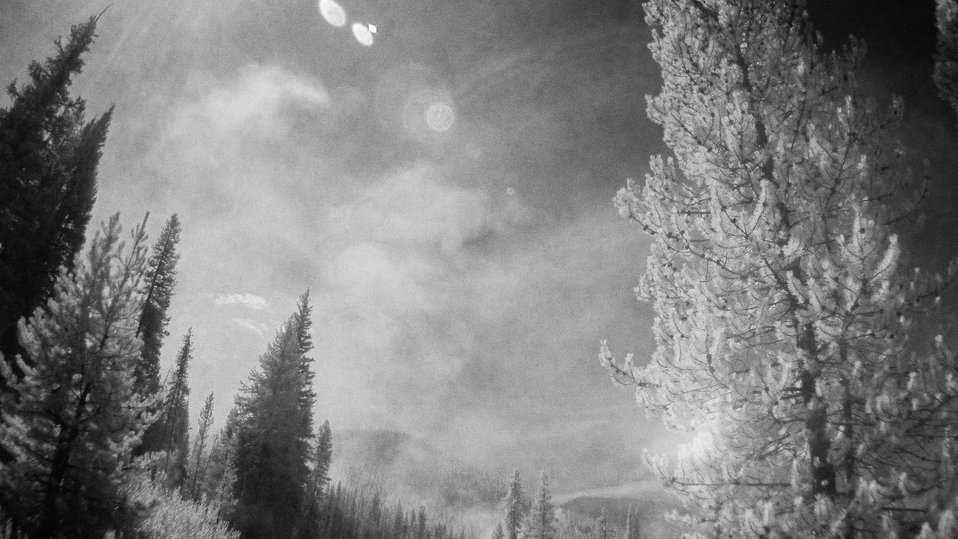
Infared view of smoke from the Beaver Creek Fire, near Hailey, ID, on Tuesday, Aug 20, 2013.